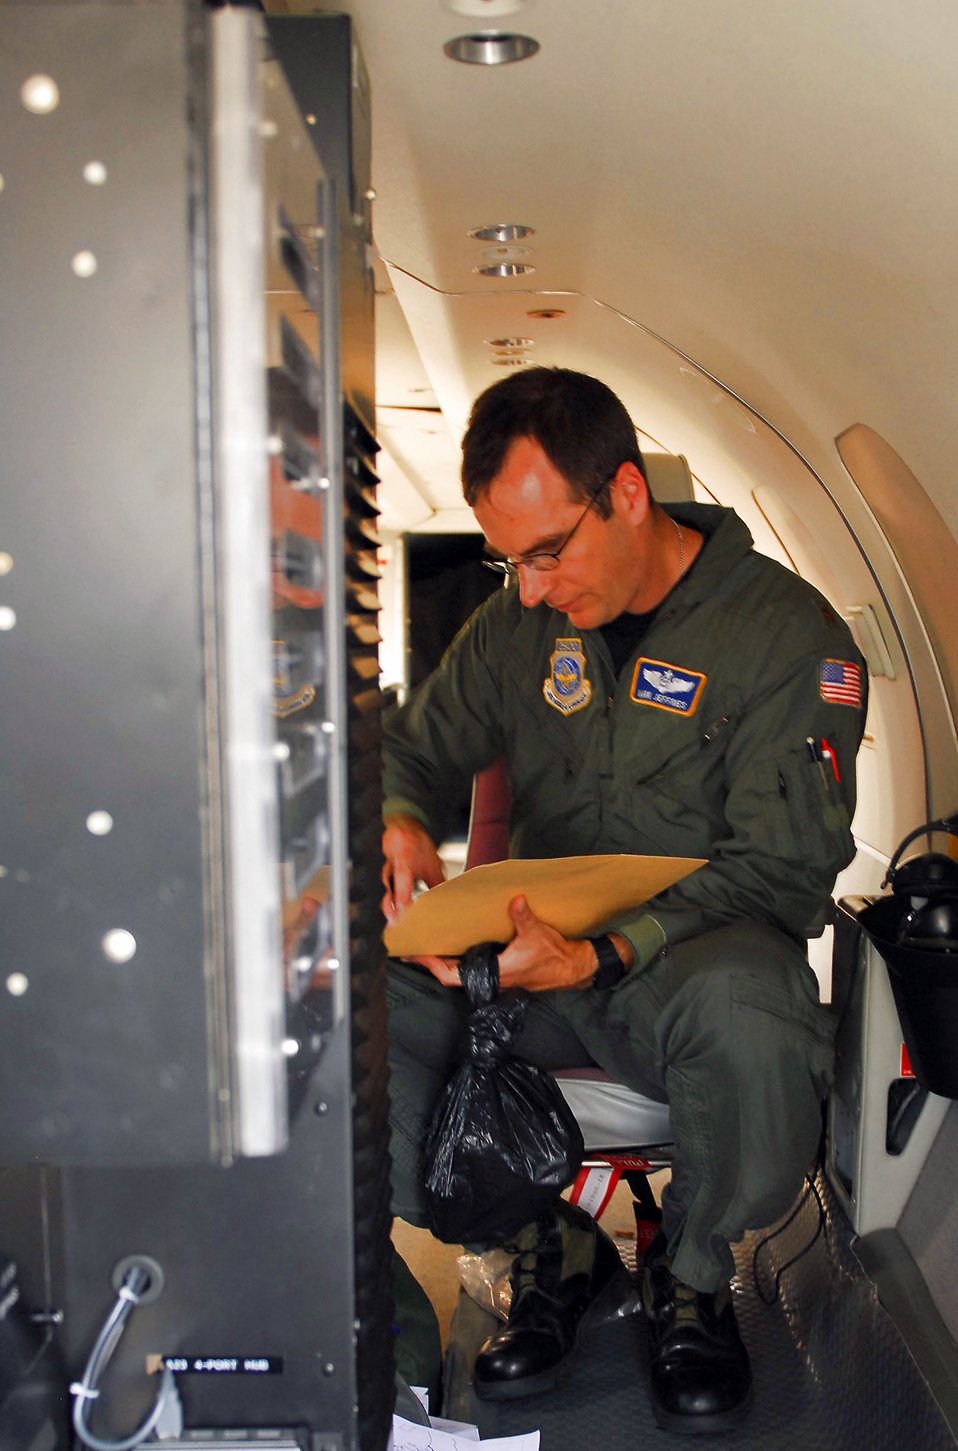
Air Guard plane photographs flood damage

Maj. Mark Jeffries packs up after a flood damage assessment flight in Indiana June 11 on board an RC-26. Major Jeffries was one of several pilots to fly over Indiana in the RC-26 providing live footage of the area for the Indiana National Guard. Major Jeffries is a mission systems officer in the 130th Airlift Wing in Charleston, W.V.